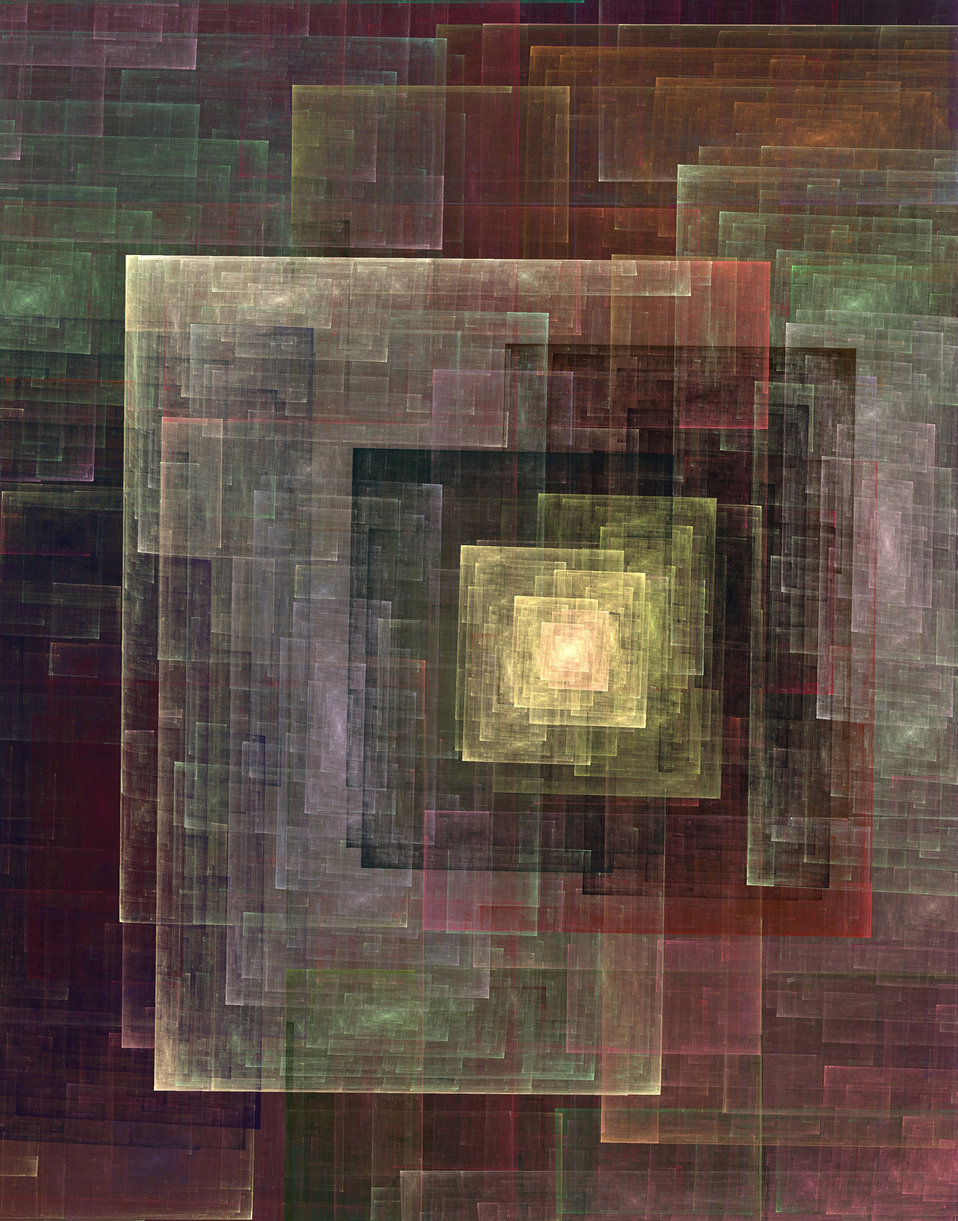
Looking up or looking down is an abstract art piece that i created in apophysis 7x a fractal art program. see if you can see the set of stairs.